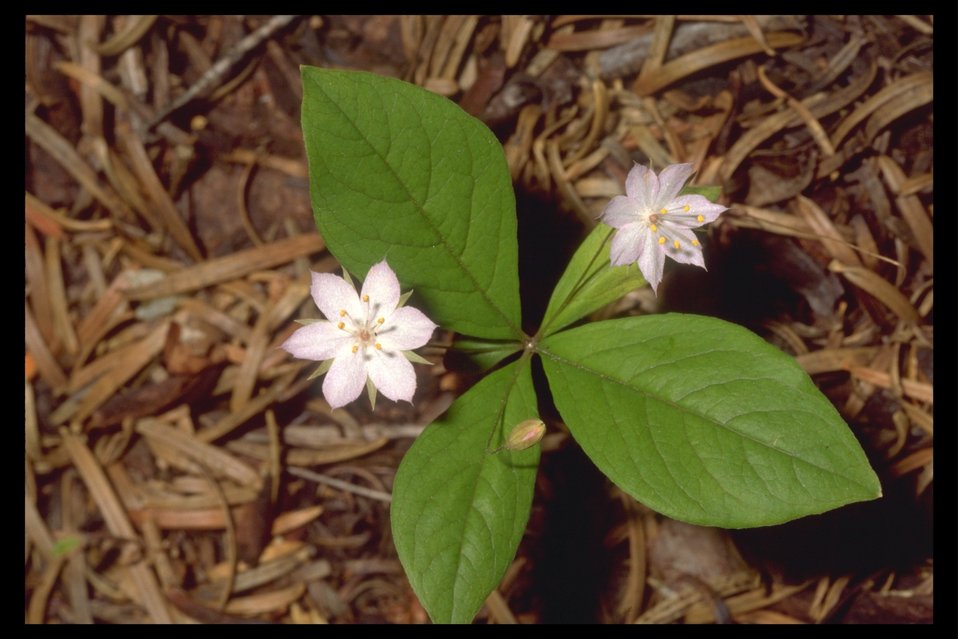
Western Starflower (Trientalis latifolia) at Lower Table Rock.